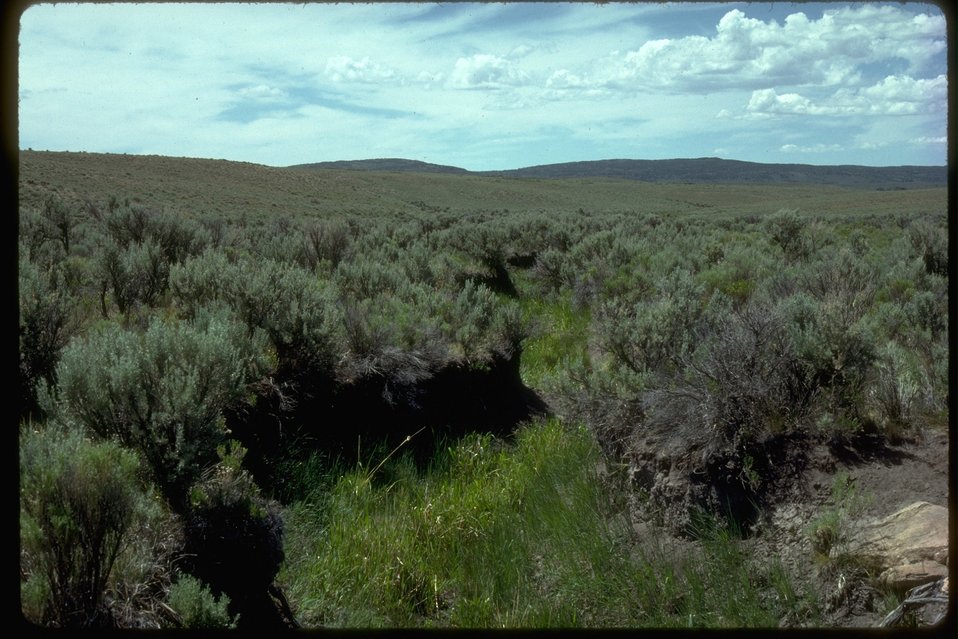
Healing stream channel in southeastern Oregon near the Sheldon Refuge.